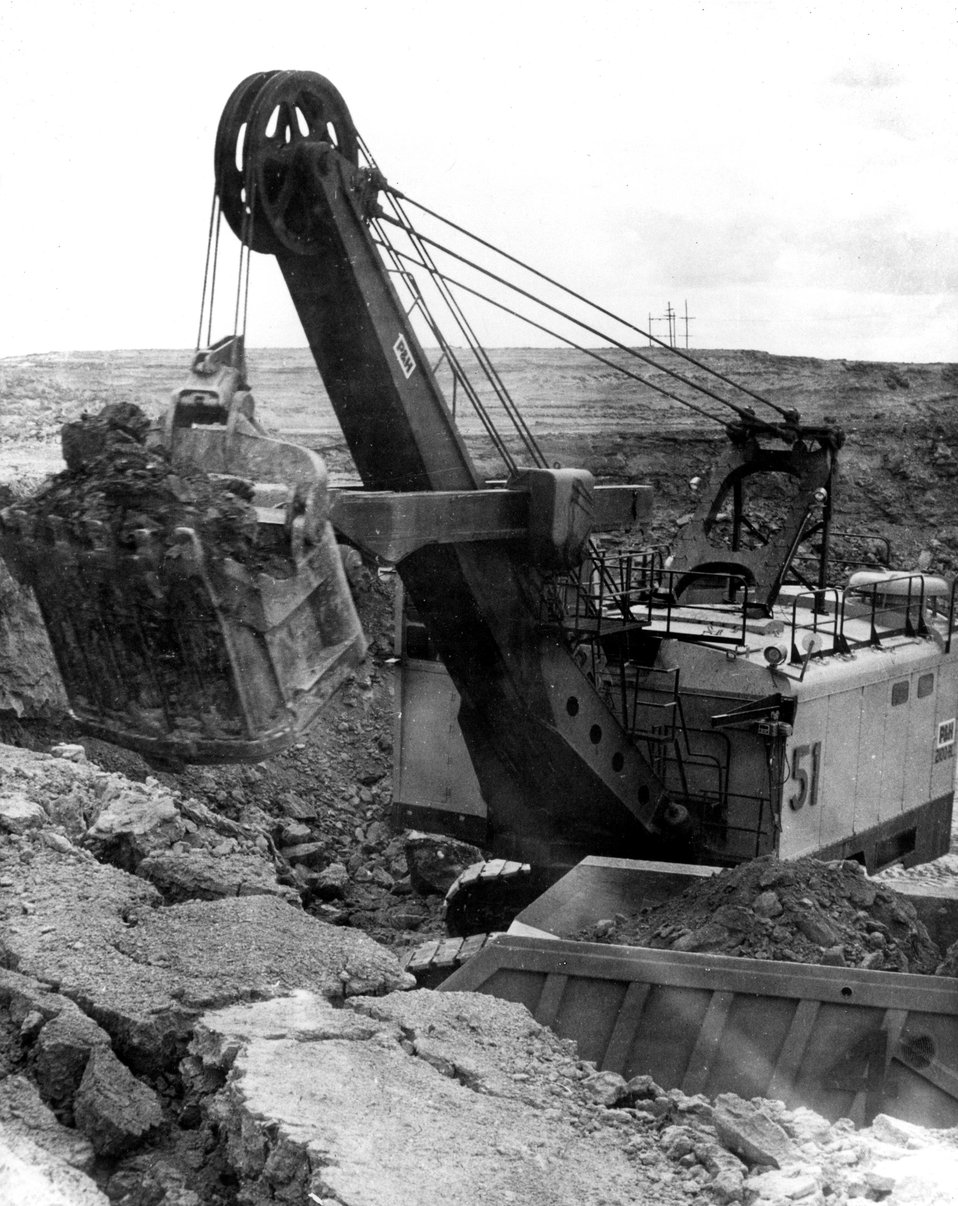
A 16-yard shovel used in removing overburden in Exxon's pit 2 at Highland uranium mine in Wyoming. c. 1976